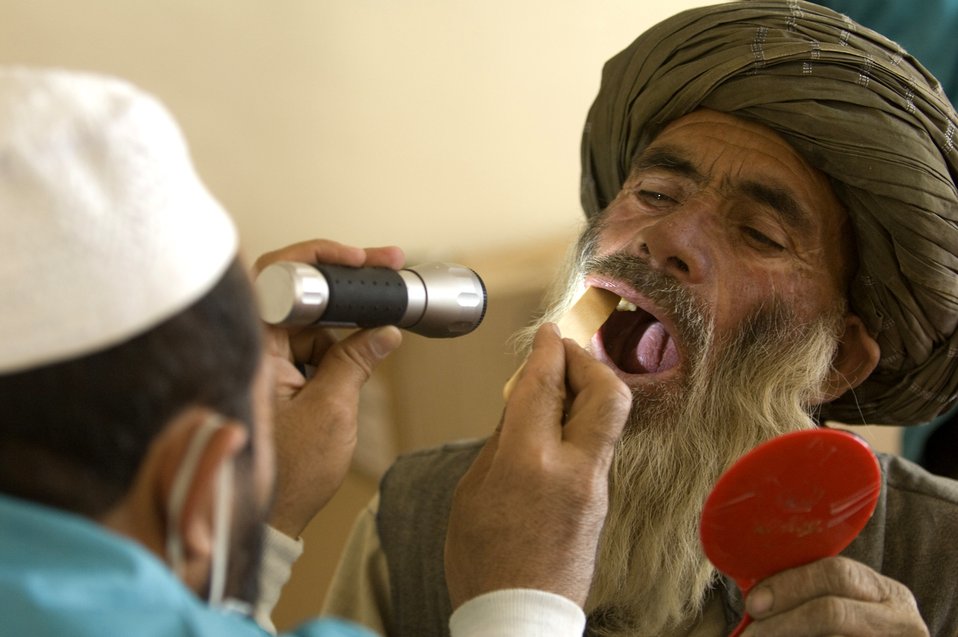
Servicemembers provide dental training for Afghans

An Afghan dentist, trained by members of the Zabul Provincial Reconstruction Team, examines an Afghan's teeth during a village dental outreach visit Oct. 11 in Zabul, Afghanistan. Although most Afghans lack basic dental hygiene products, their teeth remain relatively healthy due to limited sugar in their diets. When they do have problems, many go untreated for years with the lack of basic dental care. The Zabul PRT used the visits to address these problems, which normally consist of extracting bad teeth.